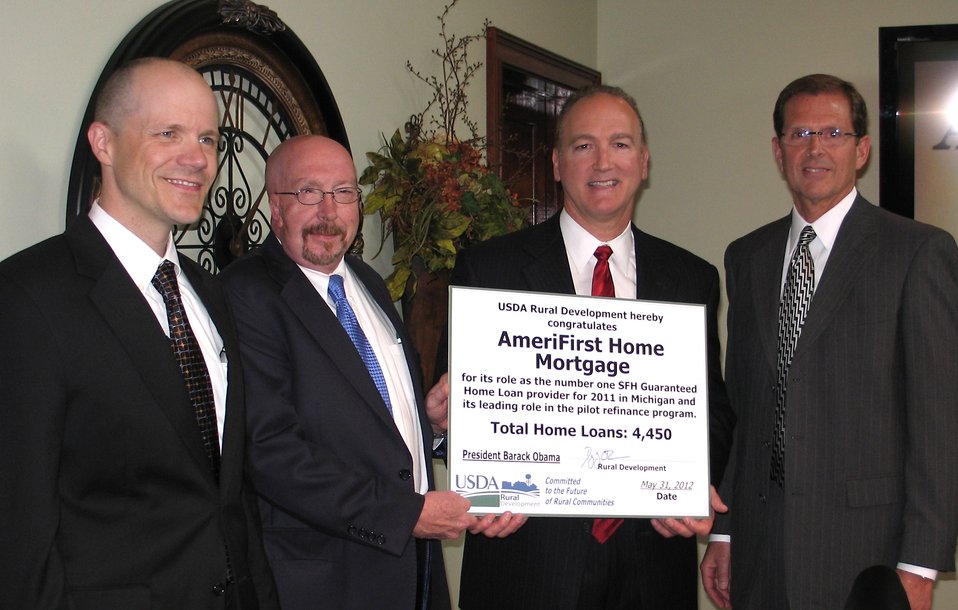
O'Brien visit 010

U.S. Department of Agriculture (USDA) Rural Development congratulates AmeriFirst Home Mortgage Company for its role as the number one Single Family Home (SFH) Guaranteed Home Loan provider for 2011 in Michigan on May 31, 2012. (L to R USDA Deputy Under Secretary for Rural Development (RD) Doug O’Brien, USDA RD Michigan State Director James Turner, AmeriFirst Co-Founder and President Mark A. Jones and AmeriFirst co-founder and Chief Executive Officer David Gahm).